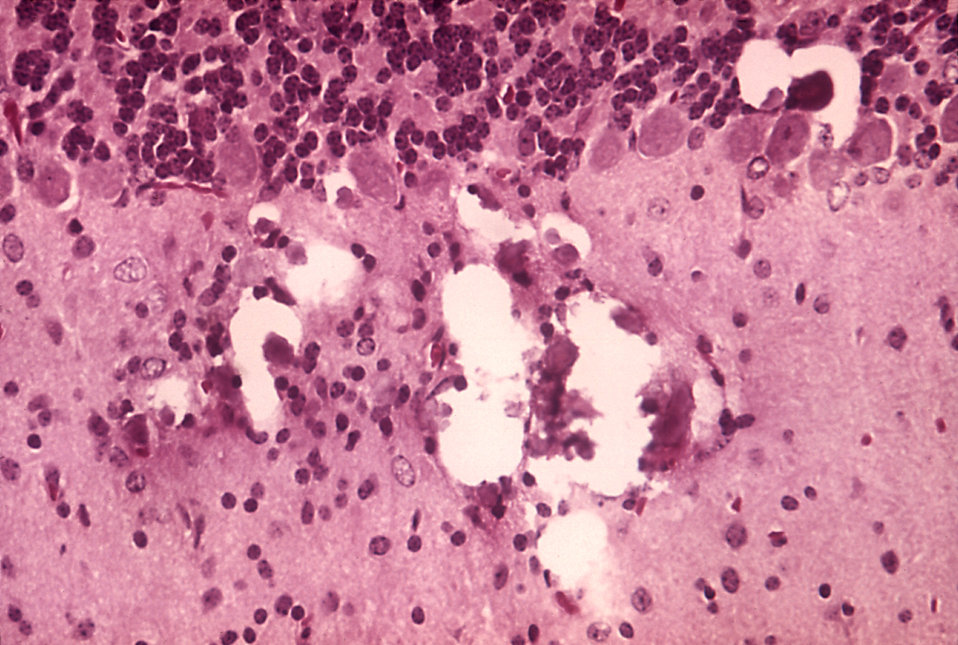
This micrograph reveals the histopathologic changes found in Tamiami virus encephalitis; Mag. 300X.